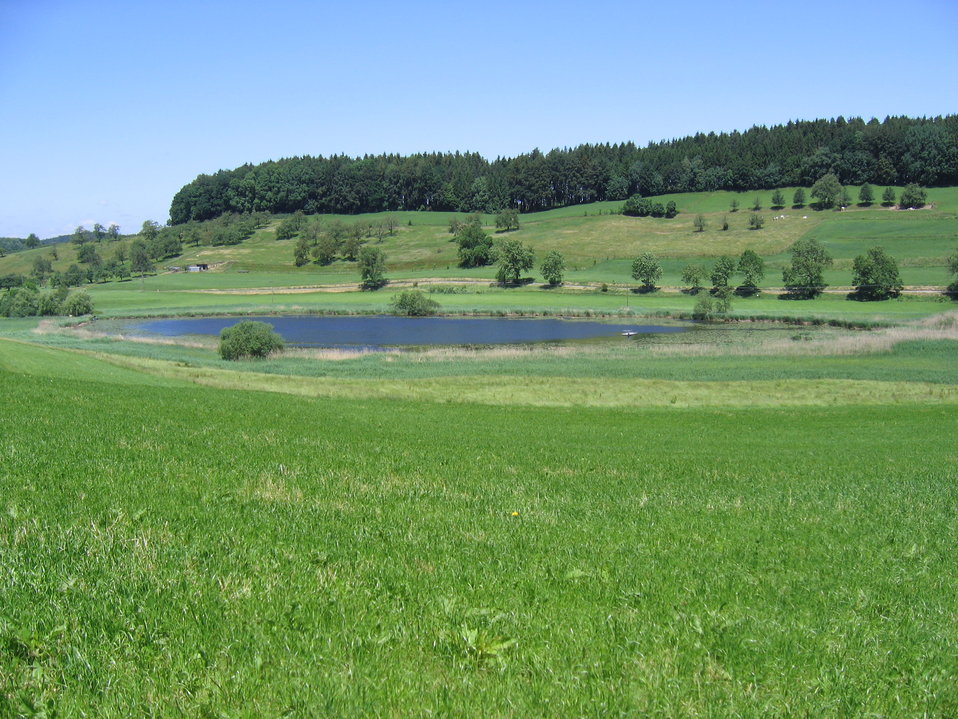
Deutsch: Wielandsee bei Tettnang / Bodenseekreis / Baden-Württemberg / Deutschland